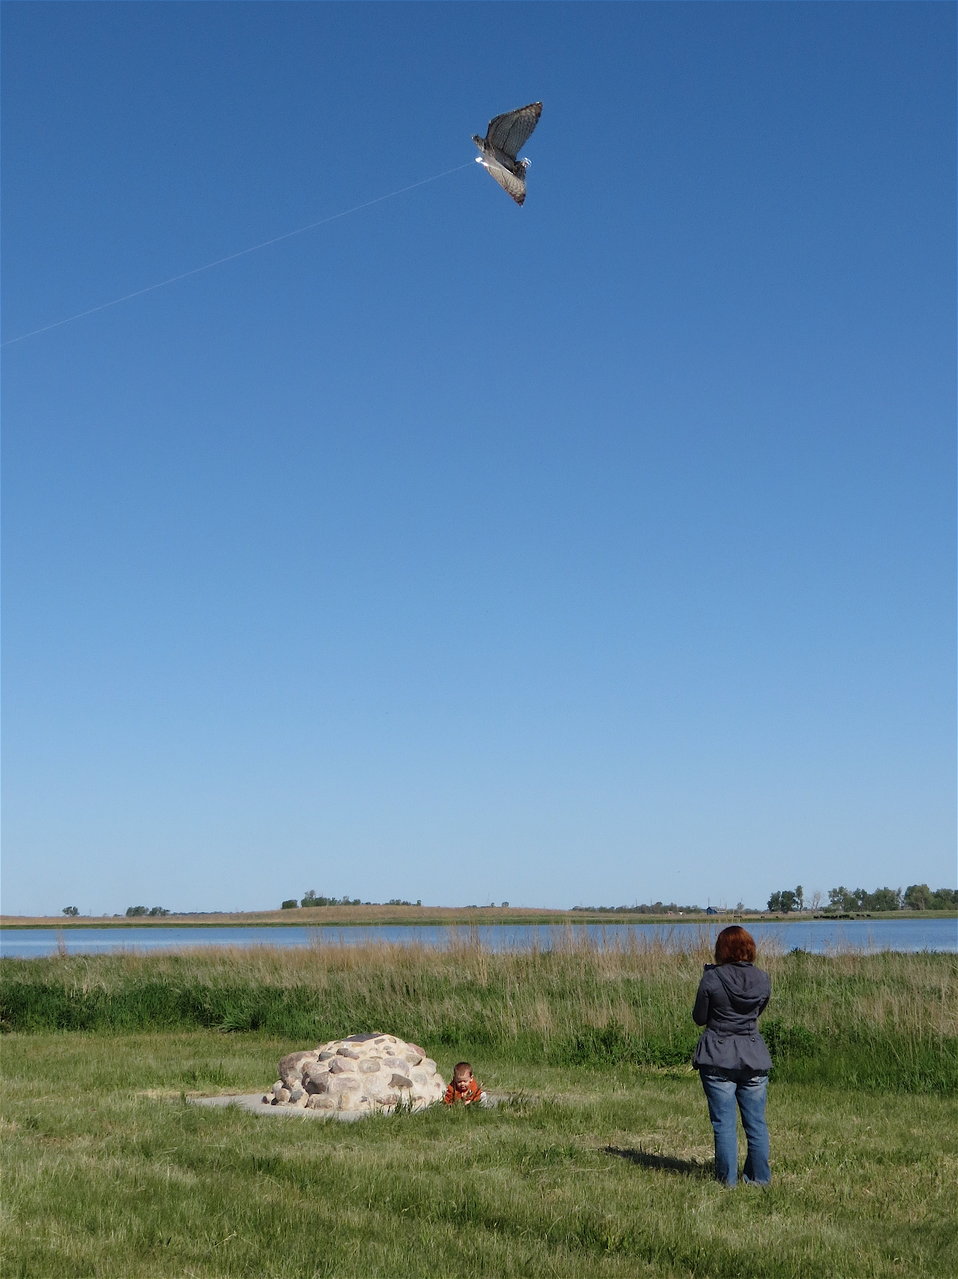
Kites in Flight 2012

Kite flying on our Maga Ta-Hohpi WPA.